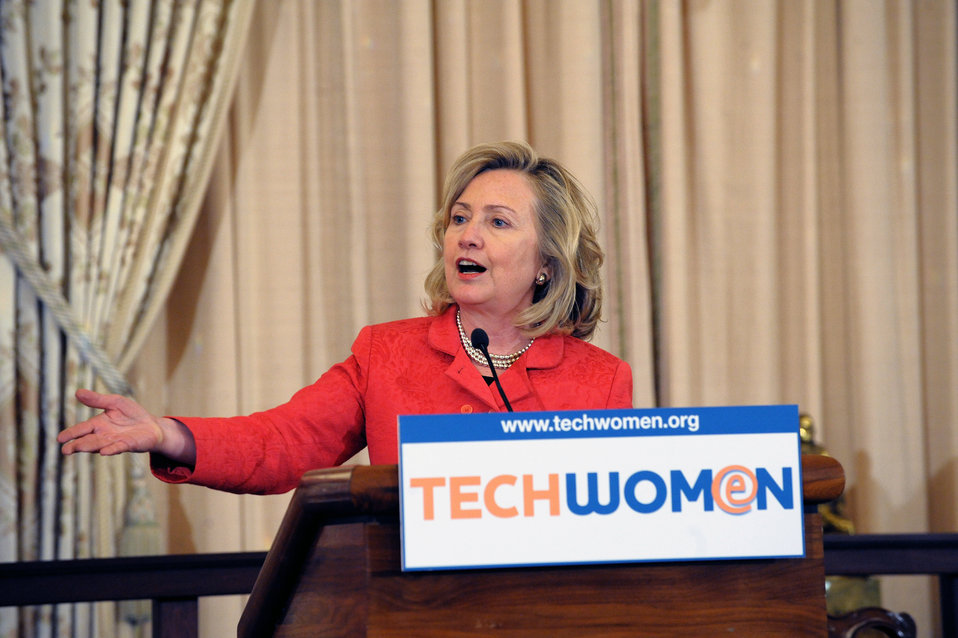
Secretary Clinton Delivers Remarks for the TechWomen Initiative

U.S. Secretary of State Hillary Rodham Clinton delivers remarks at a closing luncheon for the TechWomen Initiative, at the U.S. Department of State in Washington, D.C., on July 6, 2011.